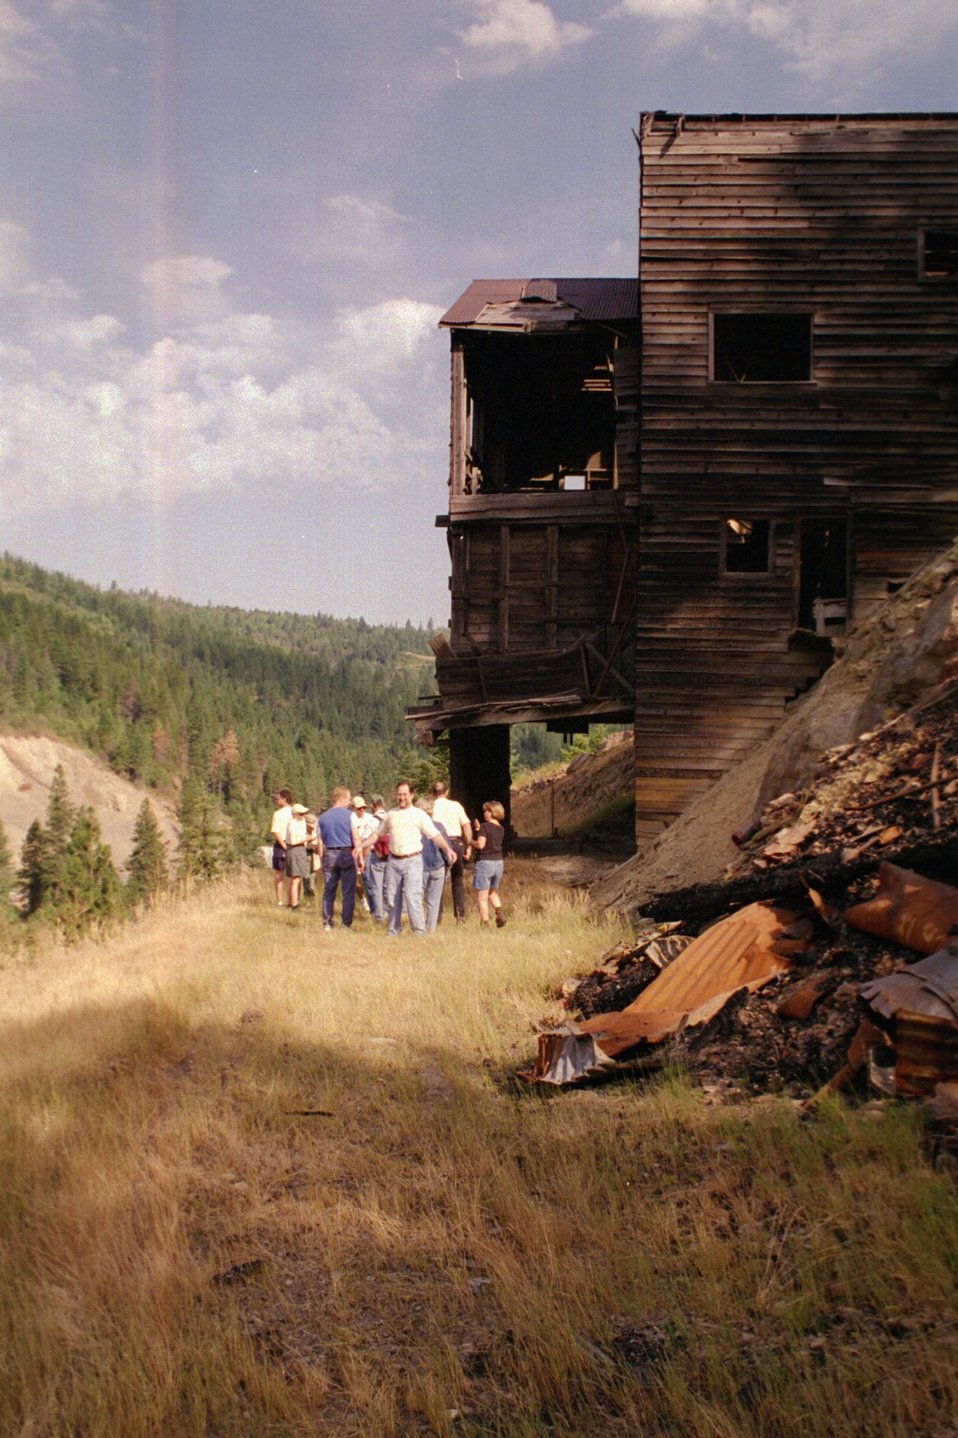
Riparian Area Stream Restoration from mining damage near Pinecreek Couer D'Alene Field Office UCSC Upper Columbia Salmon Clearwater District